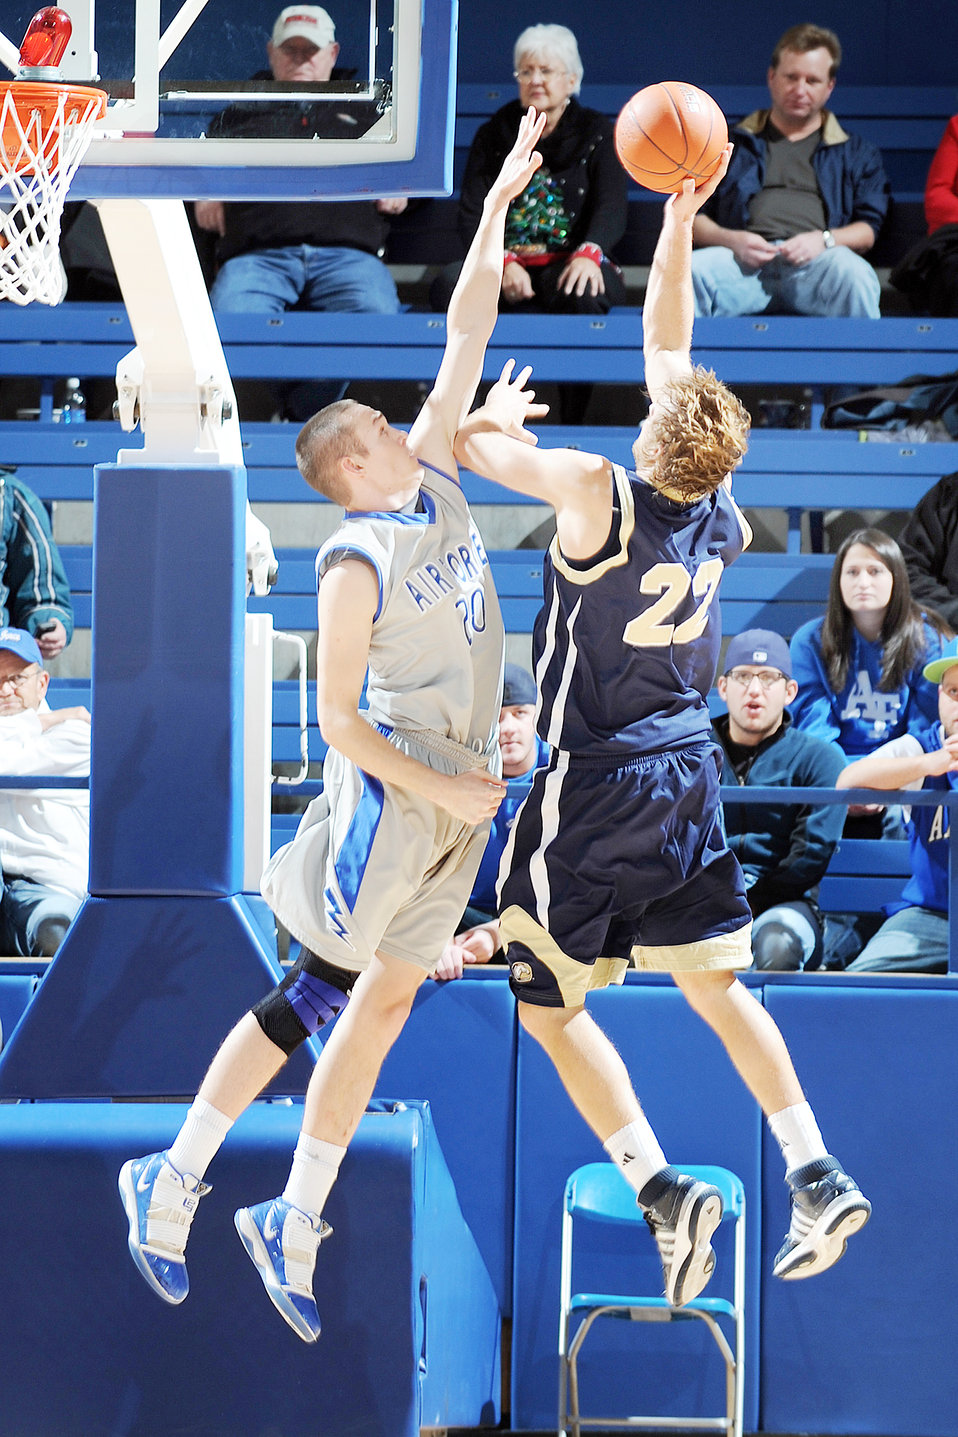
Falcons Defeat UC Davis Aggies

Junior forward Tom Fow rises high to block the shot attempted by University of California-Davis guard Joe Harden Dec. 22, 2009, at the U.S. Air Force Academy, Colo. Fow played what Air Force coach Jeff Reynolds called the best defensive game he's played all year.